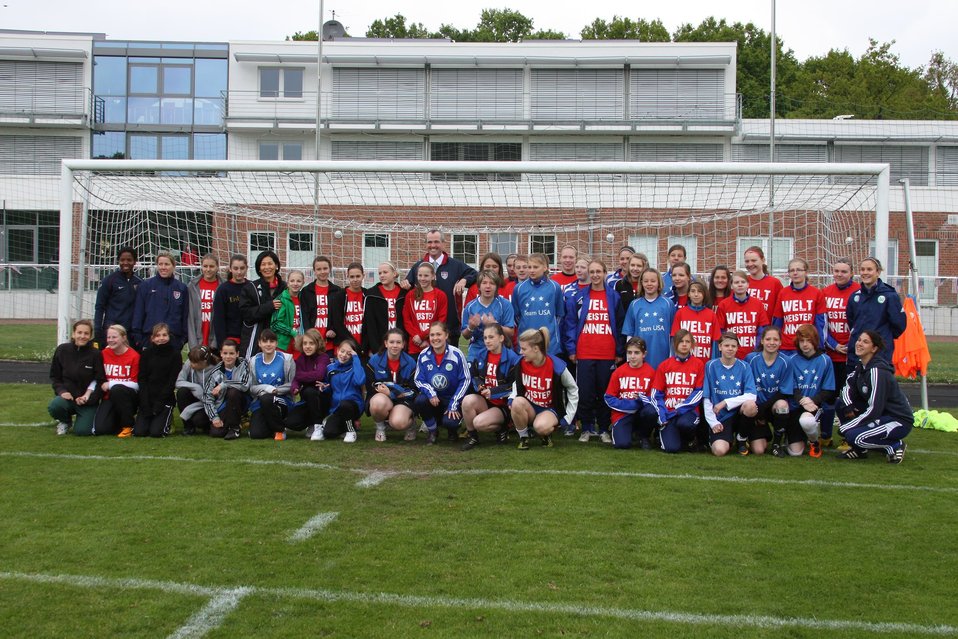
Ambassador Murphy Poses With Local School Teams

U.S. Ambassador to Germany Philip D. Murphy poses with school teams from a Lower Saxony project called “Social Integration for Girls through Soccer' in Wolfsburg, Germany, on July 6, 2011.